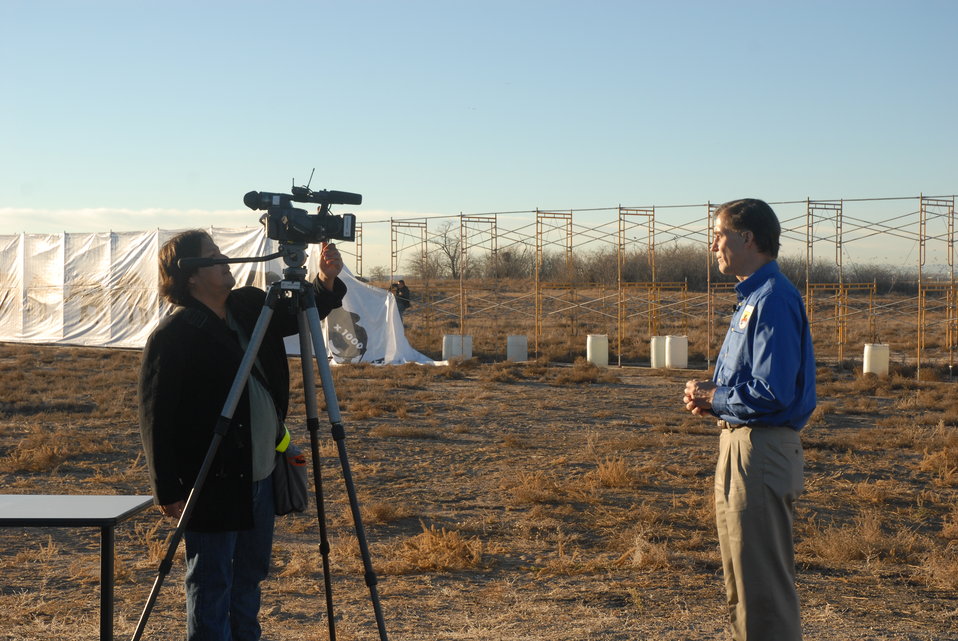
U.S. Fish and Wildlife Service Director Dan Ashe hopes this effort will raise awareness on elephant poaching and help to ensure the survival of this iconic species.